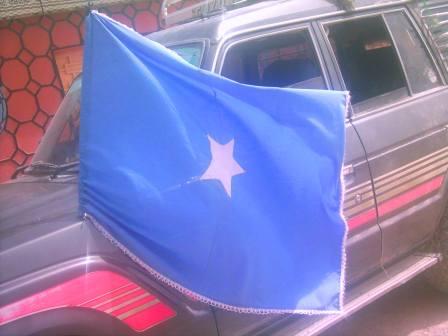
Somali flag flying in Badhan